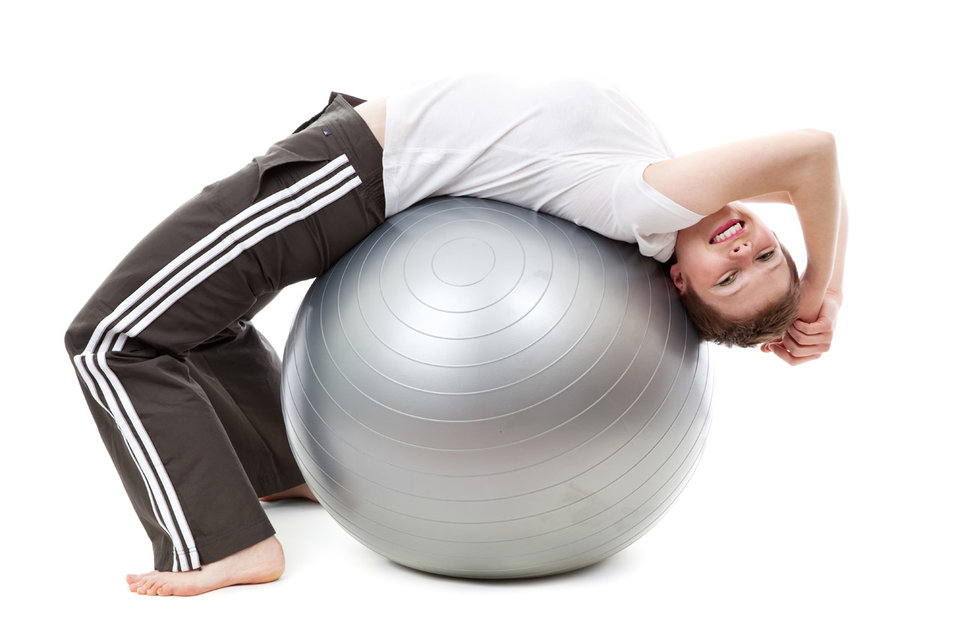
Exercising on a gym ball

Young woman is exercising on a gym ball isolated on white background.